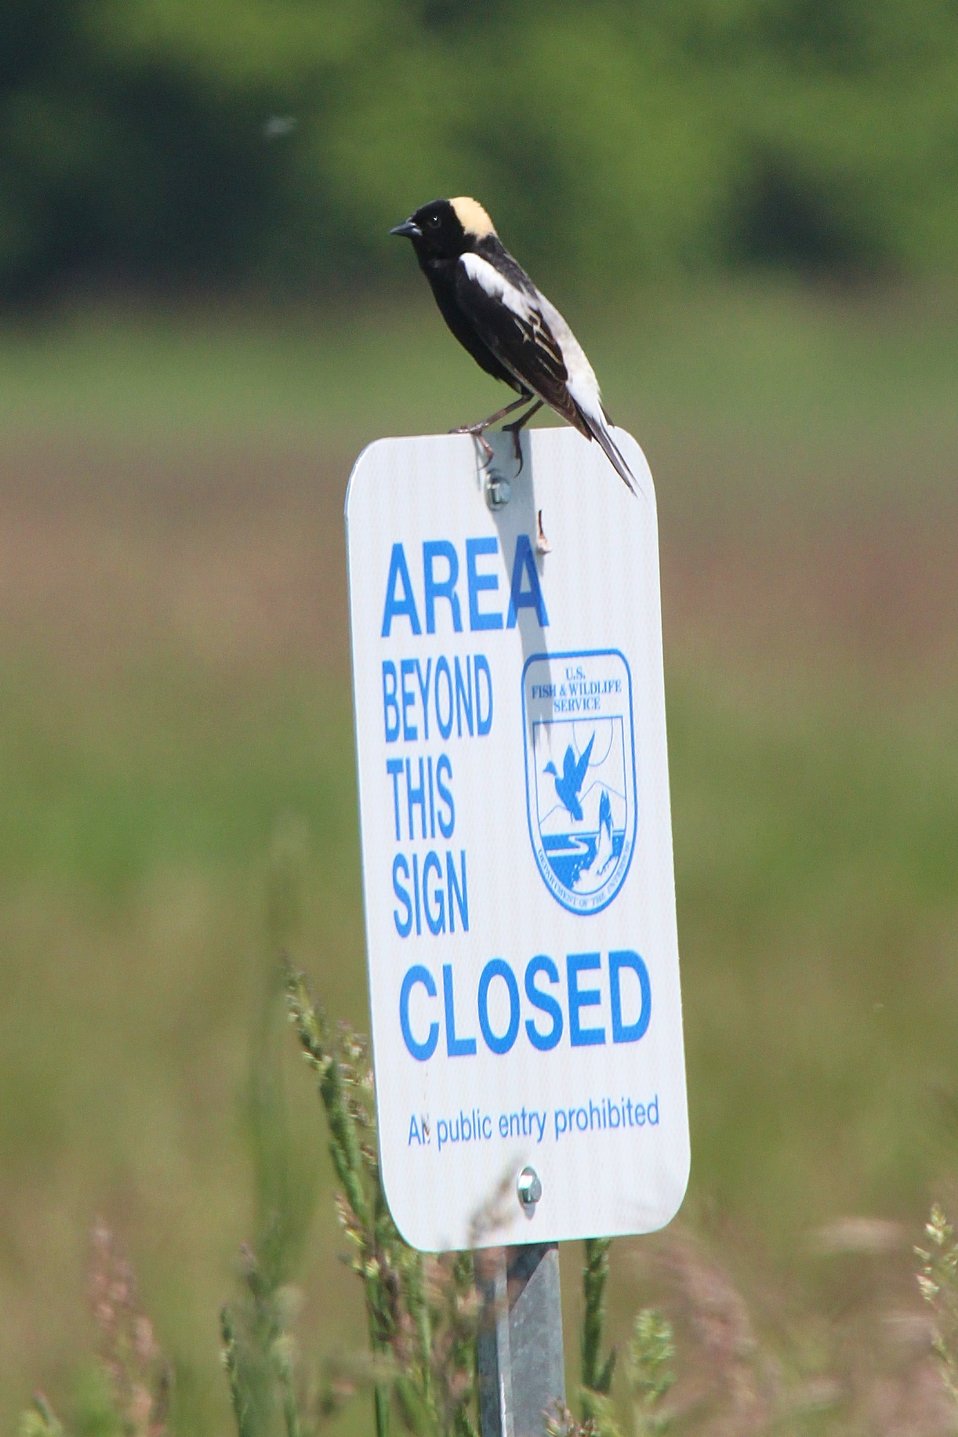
Bobolink at Missisquoi National Wildlife Refuge